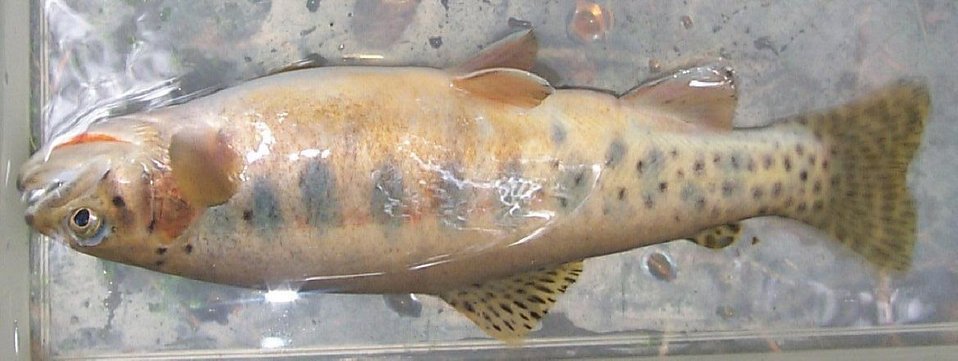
Cutthroat Salmon Field Office UCSC Upper Columbia Salmon Clearwater District